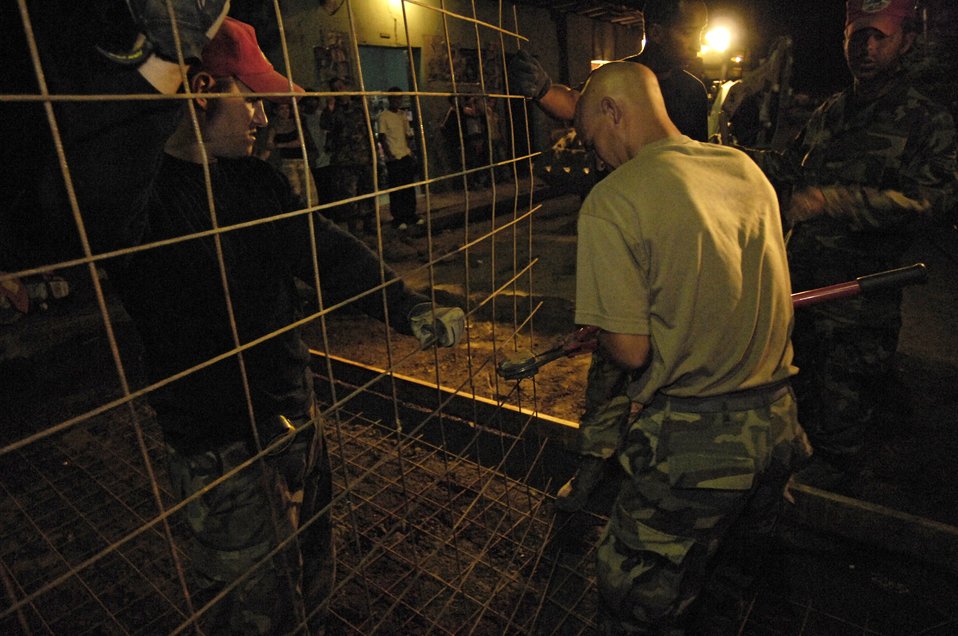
New Horizons-Nicaragua 2007

Senior Airmen Michael Cousins and Damon Bessimer cut reinforcement mesh March 2 during a roadway repair project in Santa Teresa, Nicaragua. The effort was part of New Horizons-Nicaragua 2007, a $7.25 million joint U.S. and Nicaraguan military humanitarian and training exercise, providing a new school, and medical clinic, as well as free health and veterinary care, giving aid and strengthening bonds between the two nations. The Airmen are deployed with the 820th Expeditionary Red Horse Squadron.